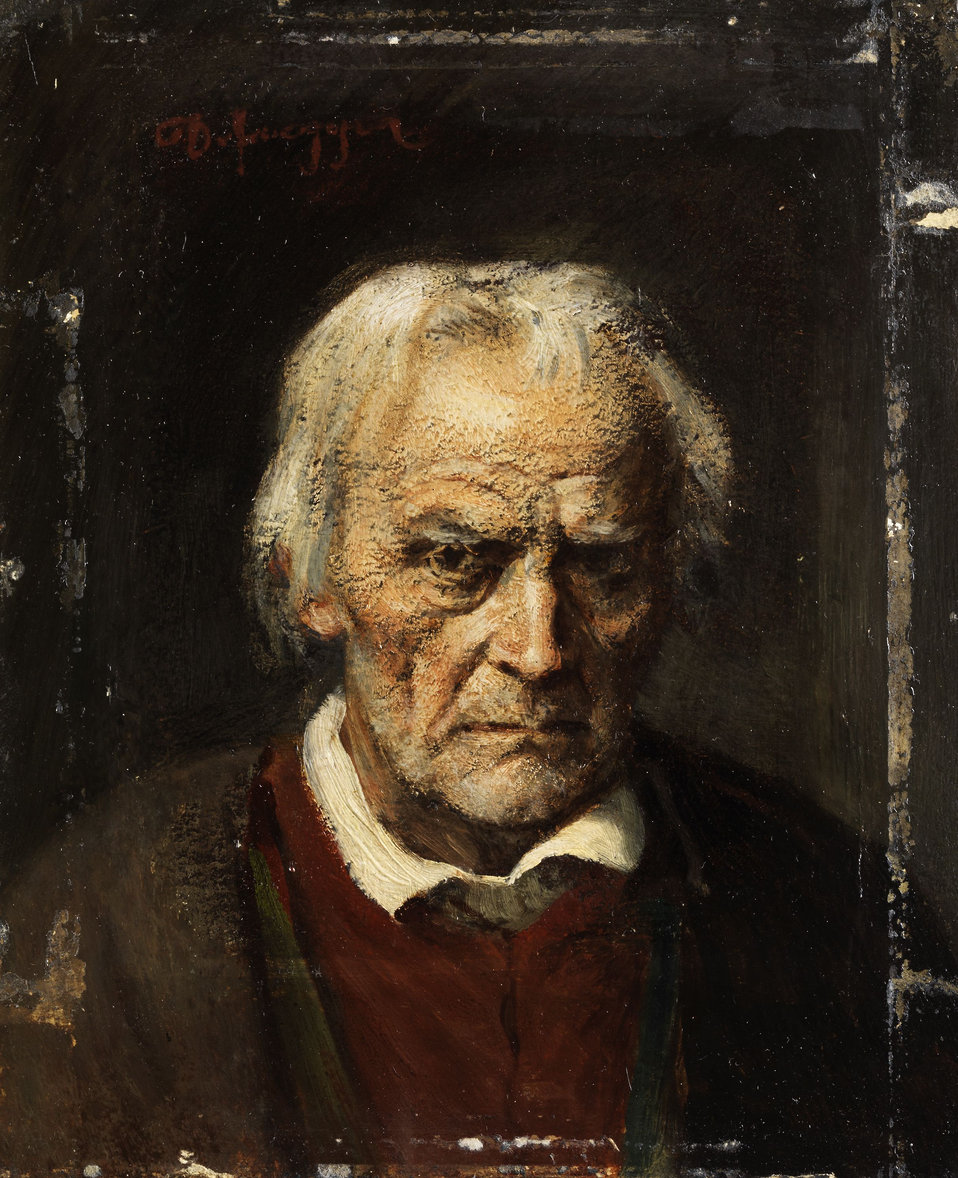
Franz von Defregger Portrait eines alten Mannes